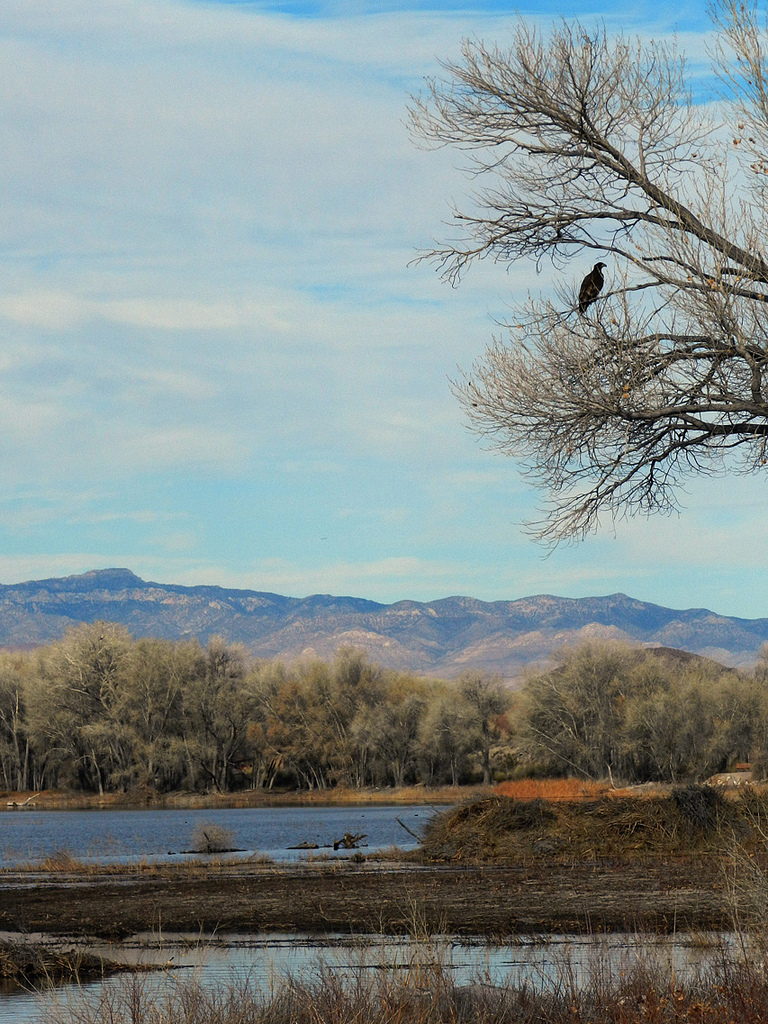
juvenile bald eagle

This juvenile bald eagle was taking a break from fishing on Jan. 5, 2012 at NV's Pahranagat National Wildlife Refuge.